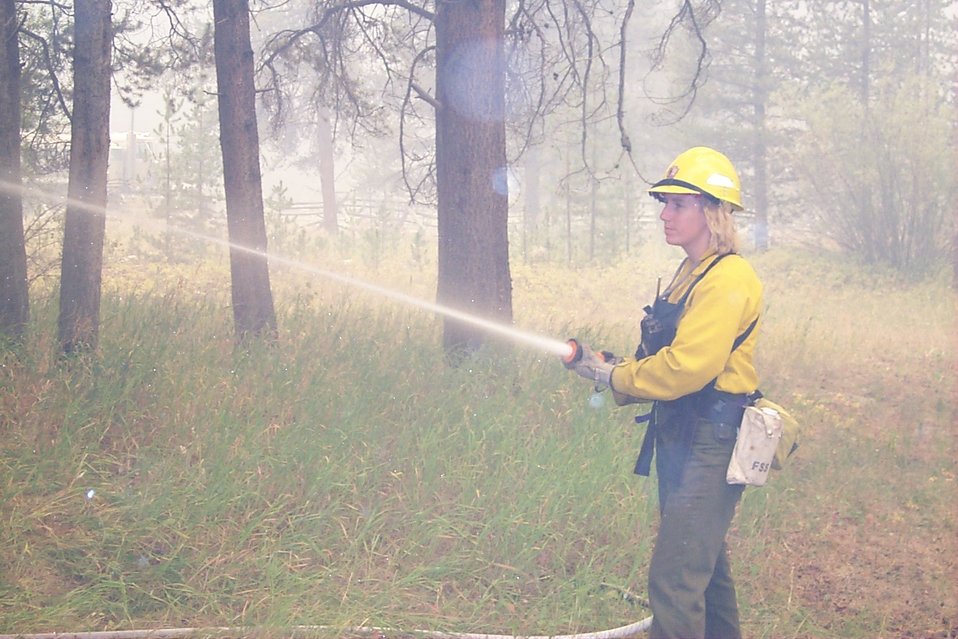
Fire retardant measures Fire Clearwater Fire Fire Fighter Salmon Field Office USRD Upper Snake River District